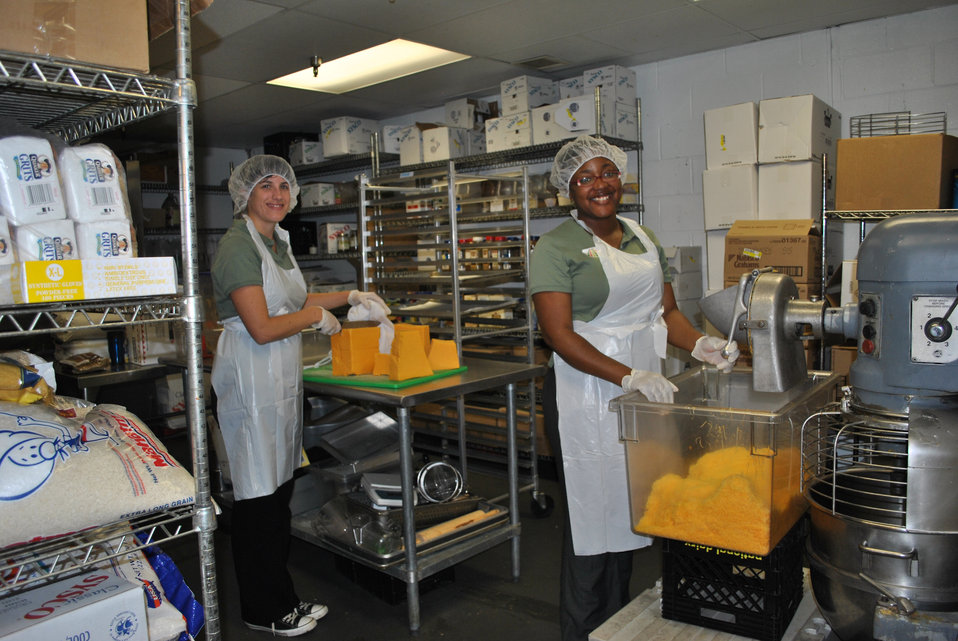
U.S. Department of Agriculture (USDA) Foreign Agricultural Service (FAS) volunteers Lindsay and Sharena Troxler dubbed themselves the “cheese queens” after being tasked with grating mild cheddar cheese for bean burritos.